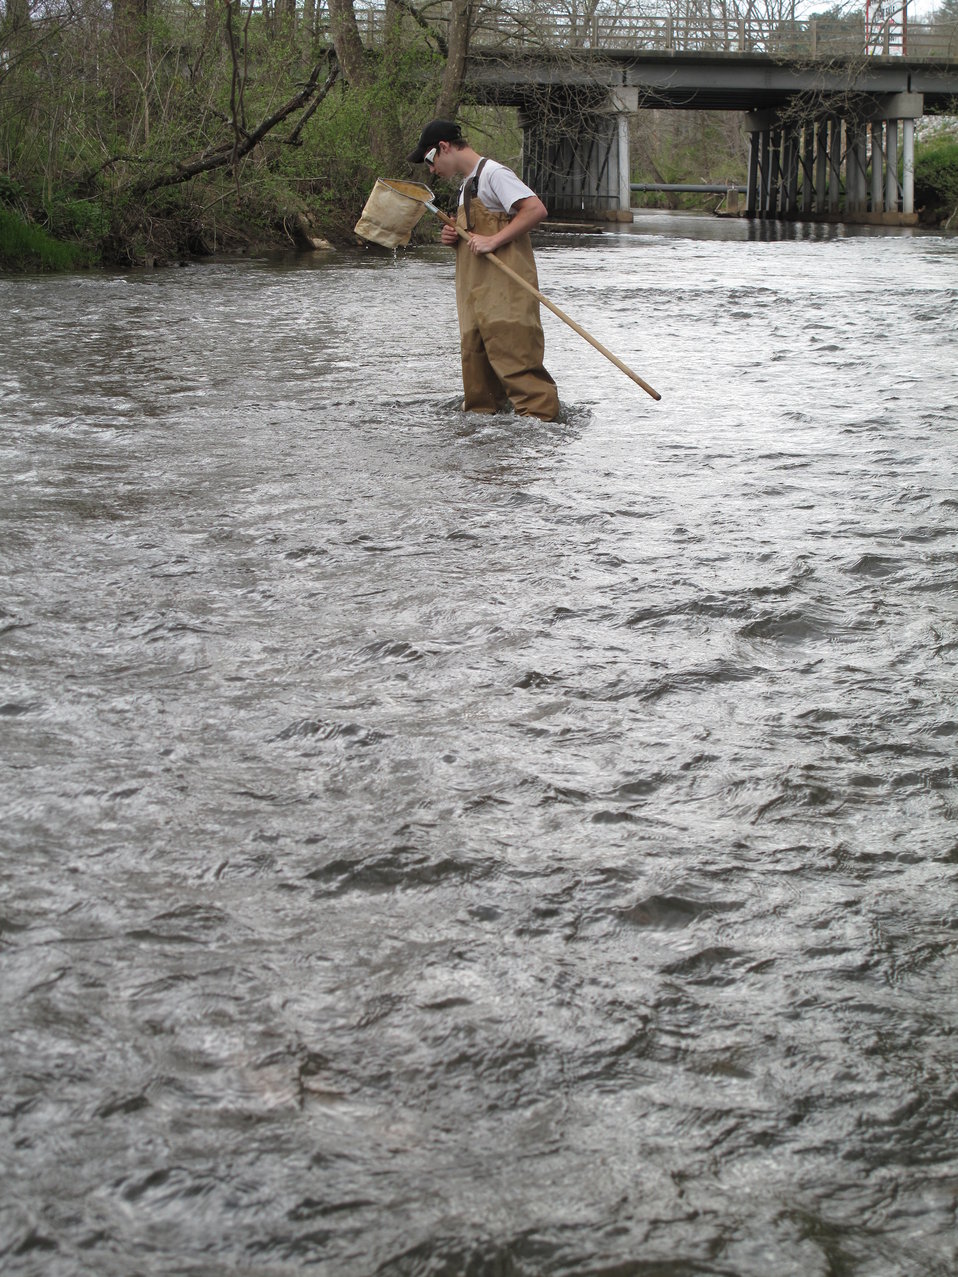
Student checking his D-net for macroinvertebrates

Over the course of four days in late April 2014, every eighth grade student at North Carolina’s Macon Middle School, Highlands School, Nantahala School, and Trimont Christian Academy visited Cartoogechaye Park, in Macon County, to learn about rivers.

The students rotated through four stations:
1) water chemistry where they had the opportunity to help test water from Cartoogechaye Creek to gain an idea of the stream’s water quality;
2) aquatic insects, where students collected and identified animals like mayflies and caddisflies, learning how life in the river reflects the health of the river
3) fish, where they were able to collect and identify fish in the stream, and then
4) stream flow, where they measured and calculated the downstream movement of water, including the velocity of the water and the total volume of water being moved per second.

The event was organized by the University of Georgia's Coweeta Long-Term Ecological Research (LTER) Program, which is based at the USFS Coweeta Hydrologic Laboratory. (coweeta.uga.edu/), with sizable support from the Land Trust for the Little Tennessee. Other supporters include the U.S. Fish and Wildlife Service, N.C. Natural Heritage Program, and N.C. Division of Water Resources.